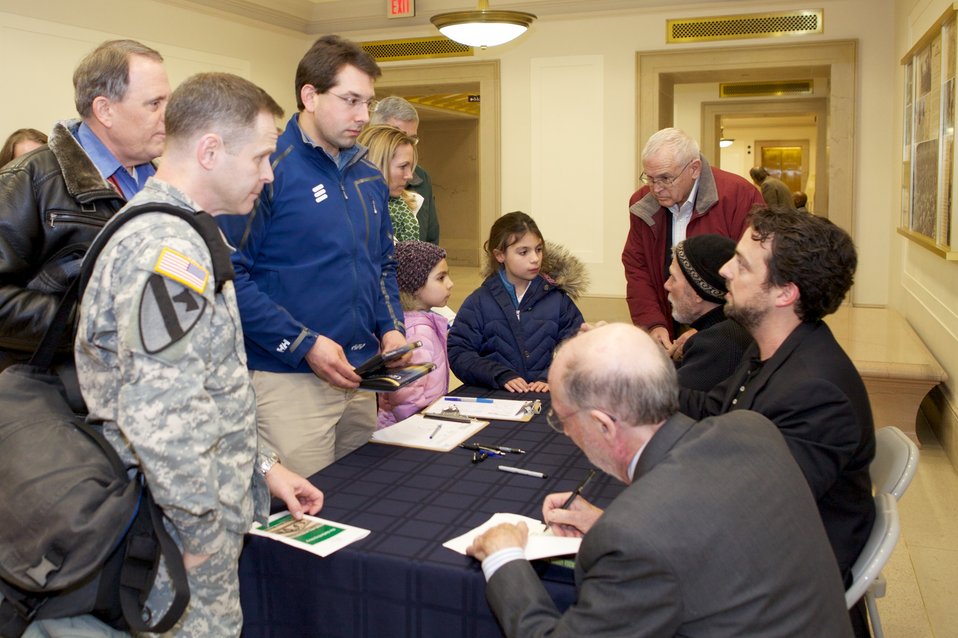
The Gettysburg Story and The Wheatfiled; Stephen Lang (in hat), actor and playwright, talks with young attendees of the films The Gettysburg Story and The Wheatfield, while Jake Boritt (right), filmmaker, and Gabor S. Boritt (foreground), Lincoln and Civil War era scholar, give autographs